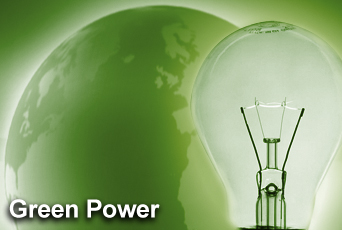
Air Force hosts energy industry forum

As one of the Environmental Protection Agency's Top 10 federal government green power purchasers in the Green Power Partnership in 2006, the Air Force will demonstrate its Advanced Power Vehicle that incorporates hybrid technology in the ground transportation fleet during the Energy Industry Forum March 8 to 9 in Arlington, Va.